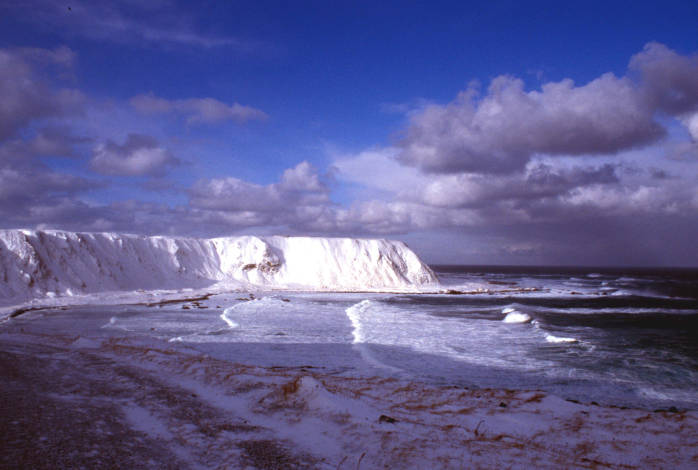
Shemya Island Cable Bowl View west